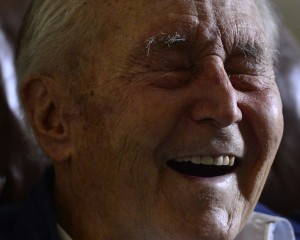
Double Ace Photos

Parr flew 641 combat missions throughout three wars. He was medically retired on Oct. 17, 1976.